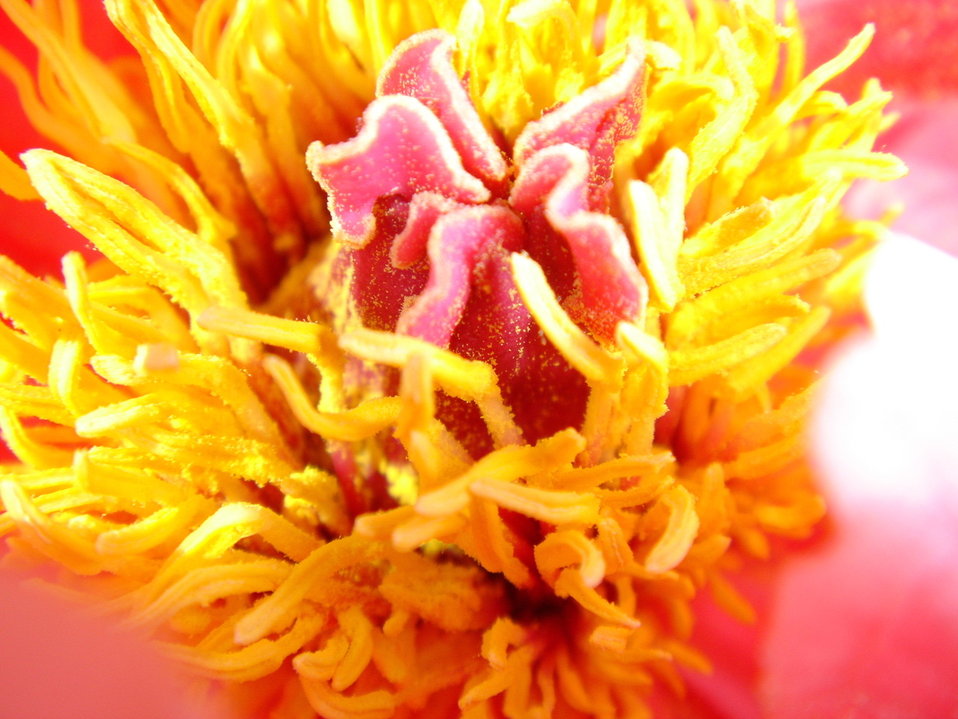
Paeonia suffruticosa5